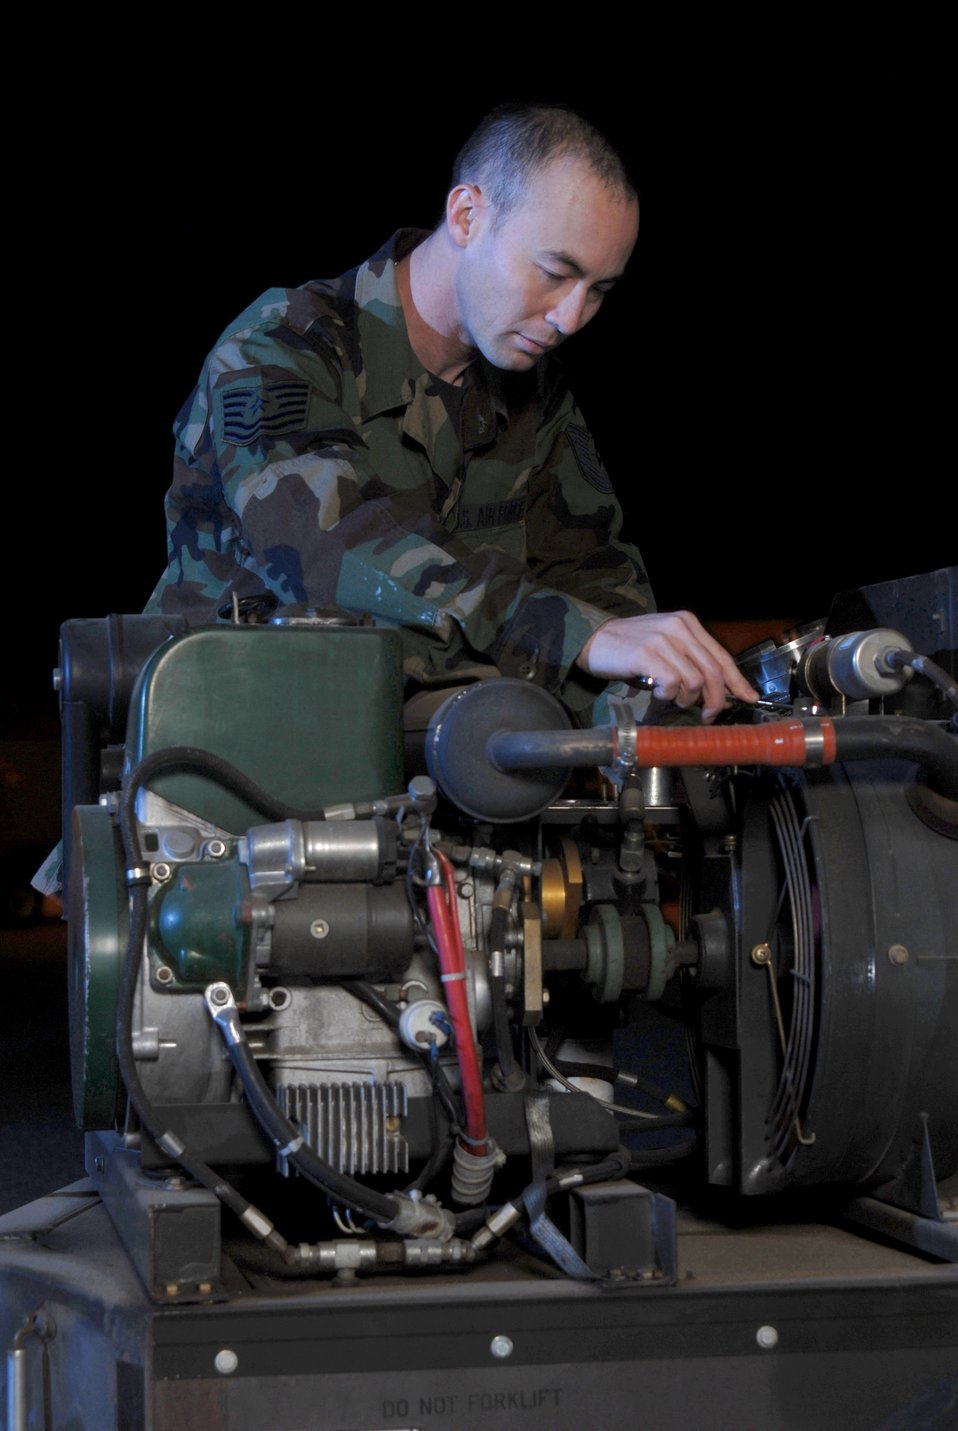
AGE makes a difference

Tech. Sgt. Tom Wilson inspects a portable ground shelter heater Dec. 5 at March Air Reserve Base, Calif. Sergeant Wilson, an aircraft generation equipment technican from the 452nd Maintenance Squadron, is an air Reserve technician here. Air Reserve technicians are full-time civilian employees of the Air Force who must maintain active status as reservists in an Air Force Reserve unit. They are permanent employees who, in the event of mobilization, are available for active duty in their assigned military position. They are essential for the operational readiness of their Reserve unit.